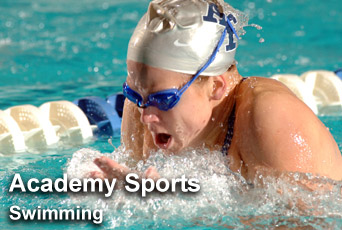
Academy Sports: Swimming

For up-to-date scores on all U.S. Air Force Academy sports, visit their Web site at www.goairforcefalcons.com.